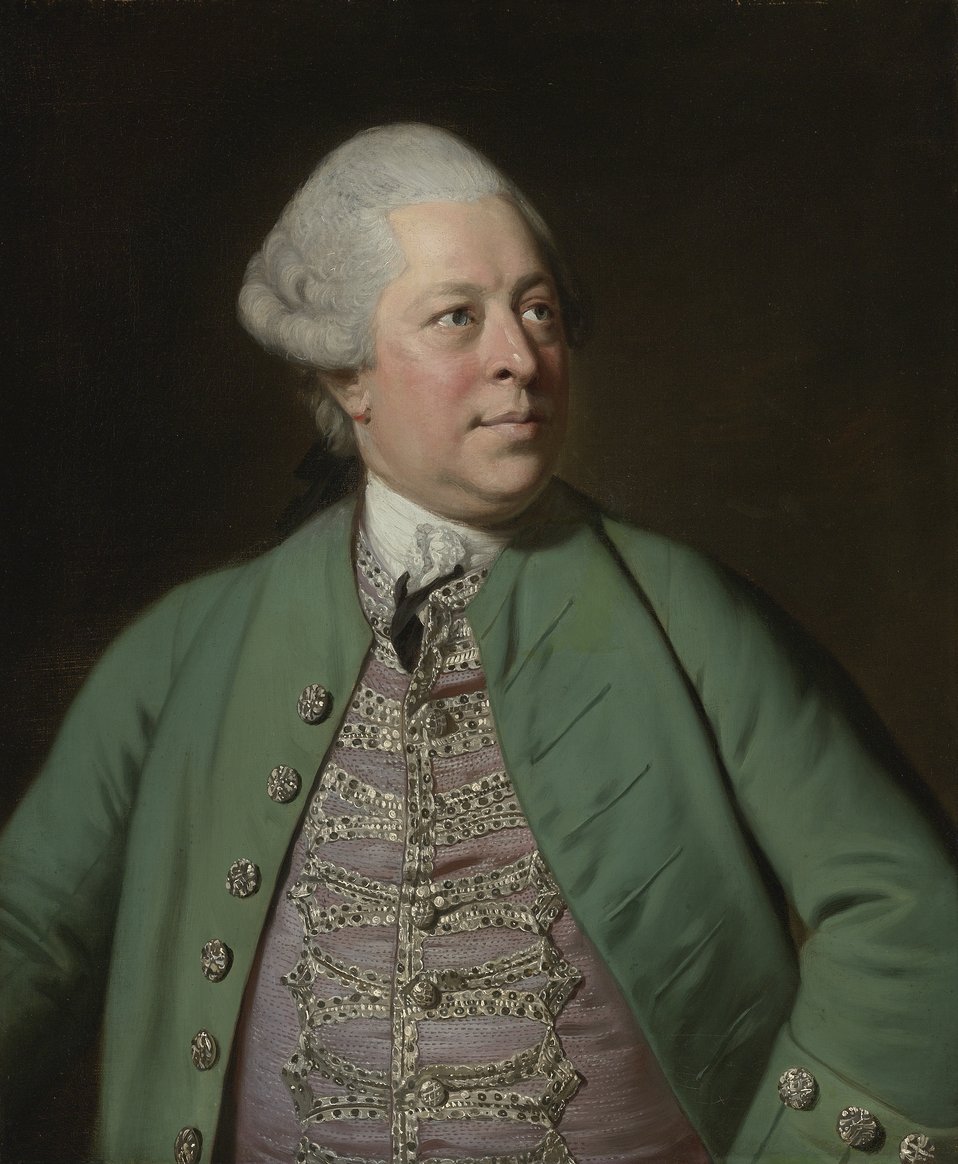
Sir Joshua Reynolds - Portrait of Edward Holden Cruttenden, Director of the East India Company